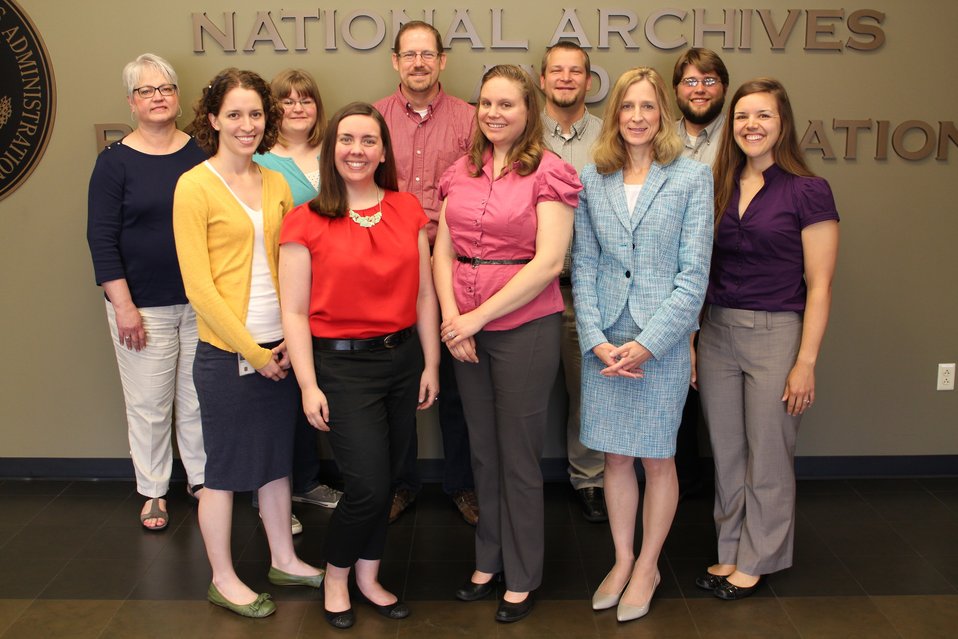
Joyce Burner, Pamela Anderson, Stephen Spence, Jake Ersland, Christopher Magee, Sarah LeRoy, Elizabeth Burnes, Jennifer Audsley, Lori Cox-Paul, Jessica Hopkins; Location: National Archives at Kansas City, Kansas City, MO